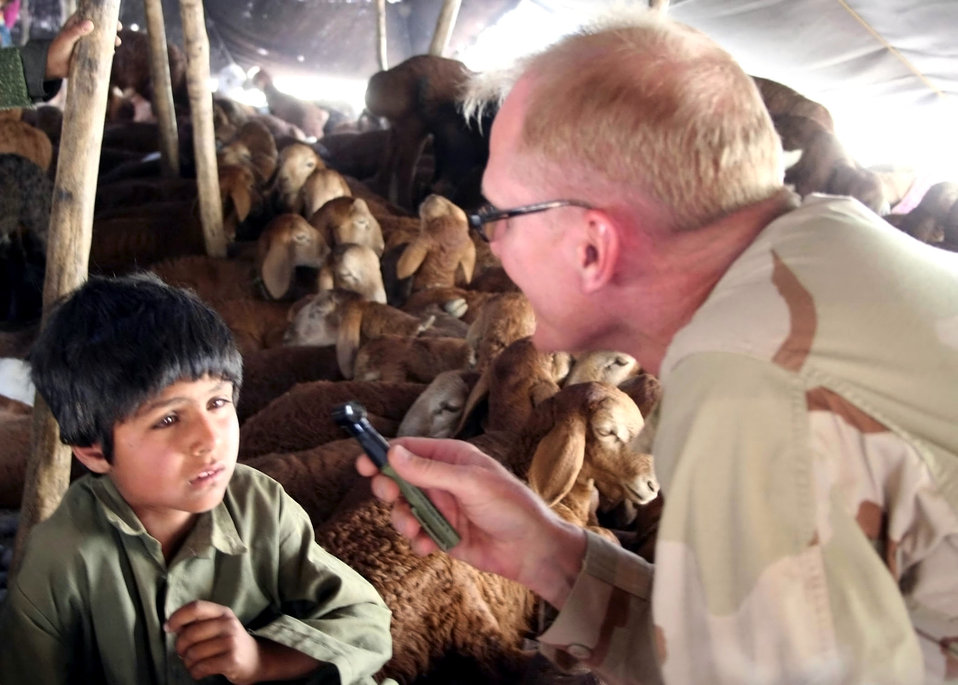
Medics make house calls on Afghan nomads

Maj. Kurt Workmaster checks a Kuchi boy's eyes during an examination conducted as part of the Medical Civic Action Program in Panjshir Province, Afghanistan, on Thursday, May 18, 2006. Major Workmaster is the Panjshir Provincial Reconstruction Team physician assistant.